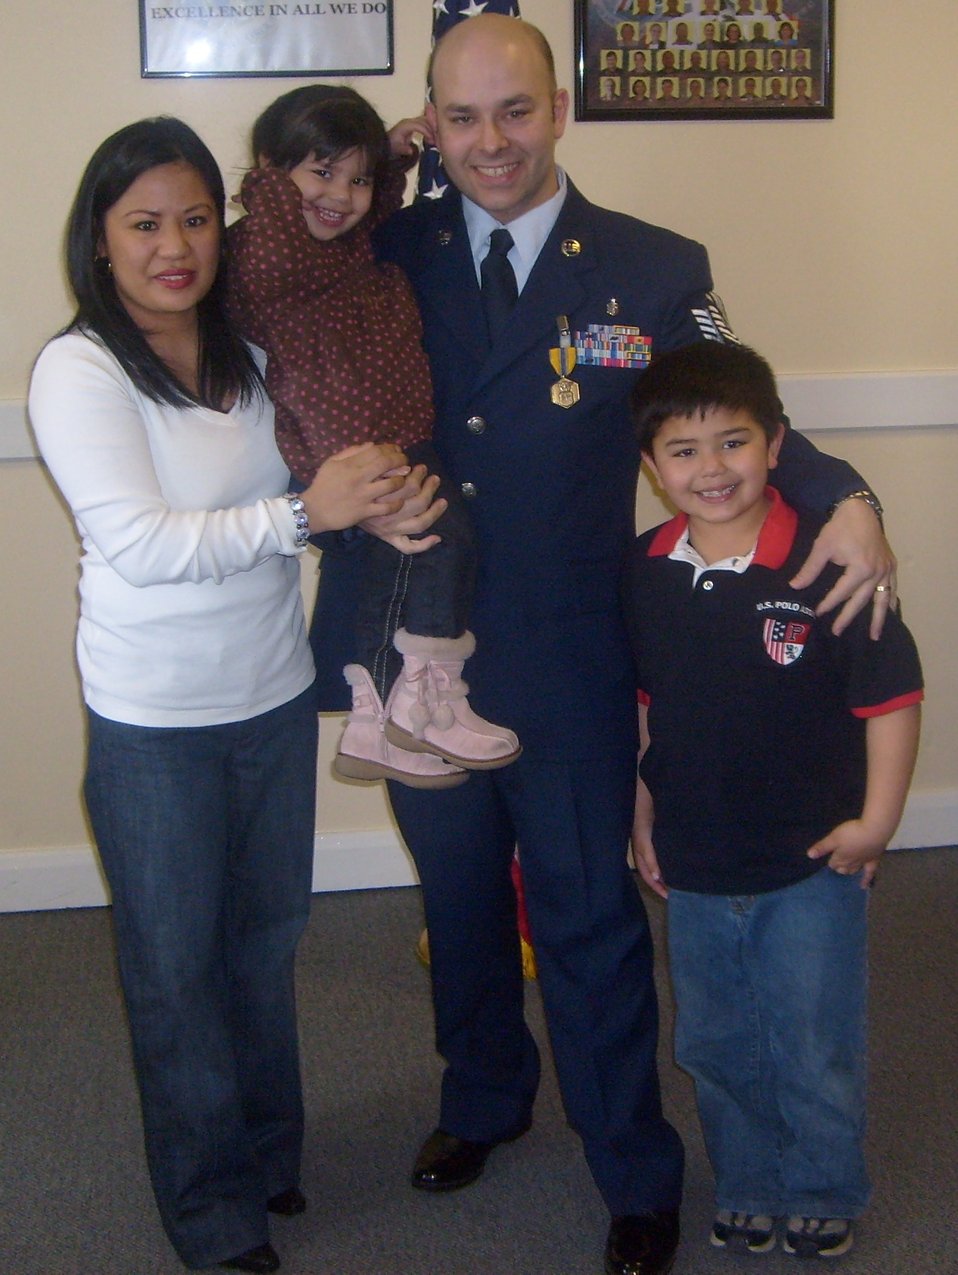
Year of the Family more than a motto

In happier times, Tech. Sgt. Shawn Mette, shares a smile with his wife, Nelia, and children, Sebastian, 9 and Skylar, 5.